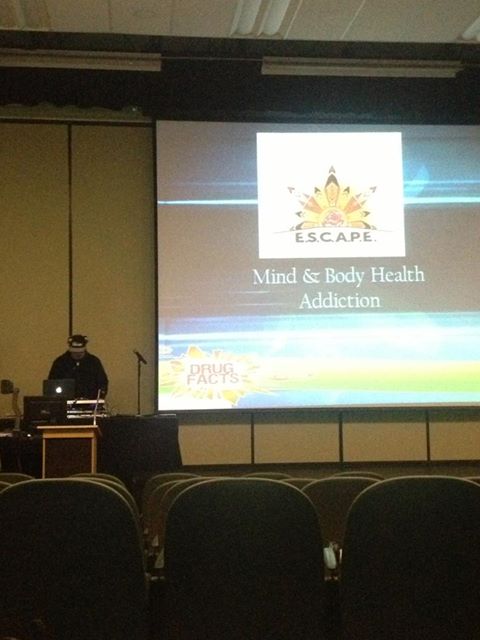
Drug facts week for ESCAPE Project in Wyoming